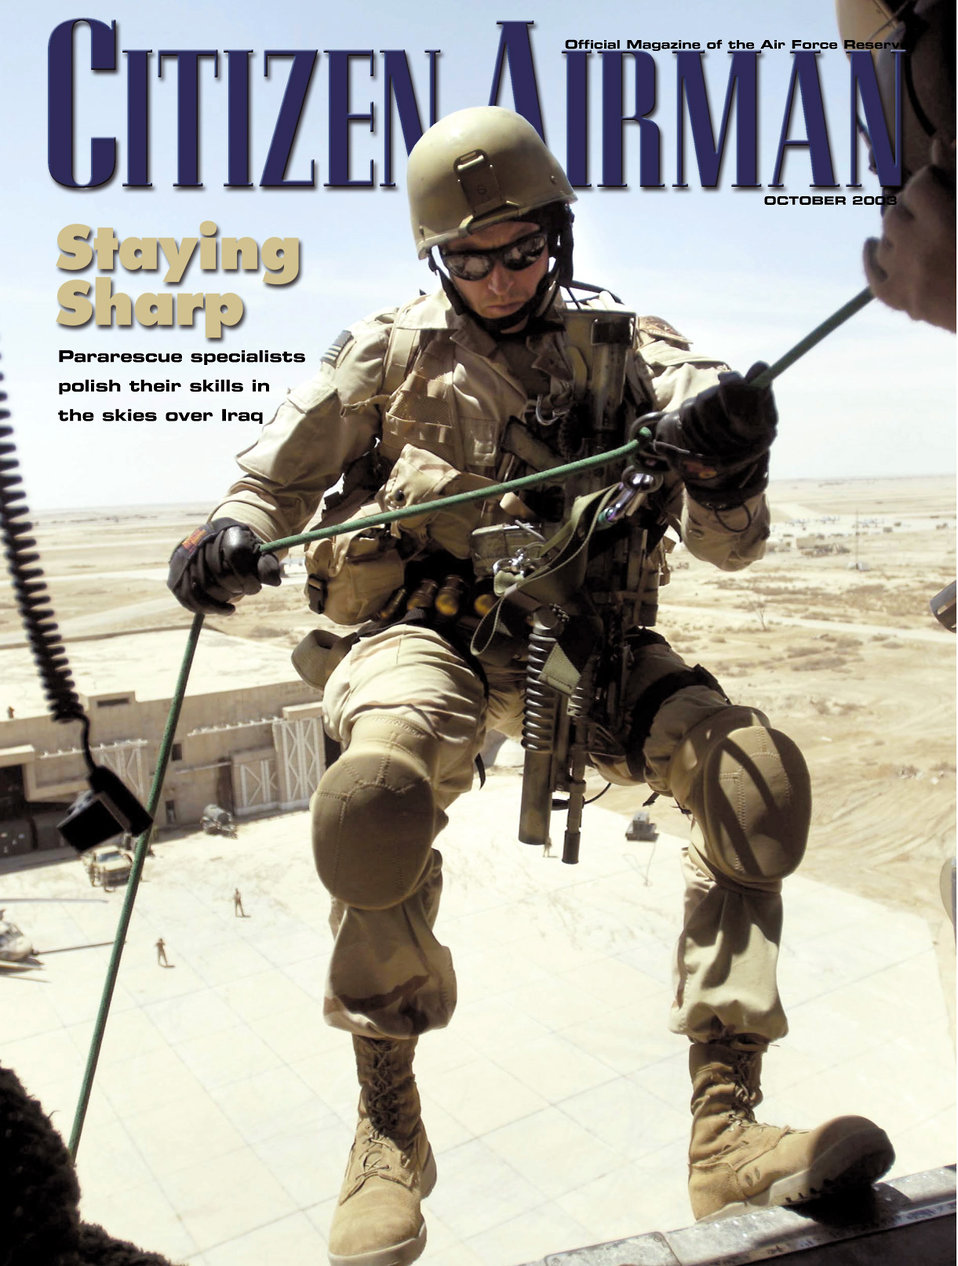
October Citizen Airman

ROBINS AIR FORCE BASE, Ga. (AFPN) -- The October issue of Citizen Airman, the official magazine of the Air Force Reserve, is now available.